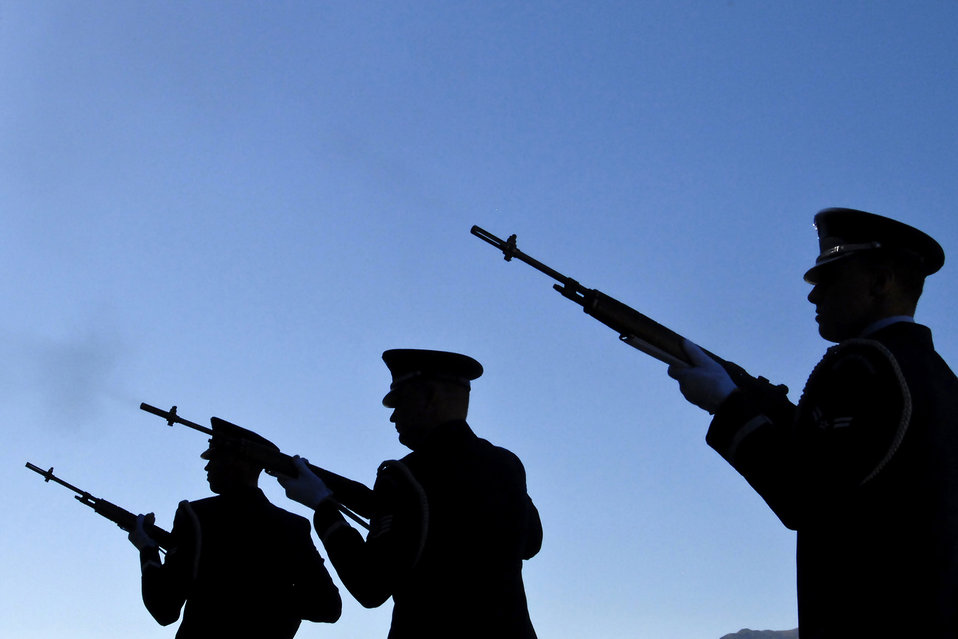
Nellis Airmen honor fallen comrades

The base Honor Guard performs a gun salute during a memorial service for 1st Lt. Joel Gentz and Staff Sgt. David Smith during a memorial ceremony June 18, 2010, at Nellis Air Force Base, Nev. The two were among four Airmen killed and three wounded when an HH-60G Pave Hawk crashed during a mission in southeastern Afghanistan June 9.